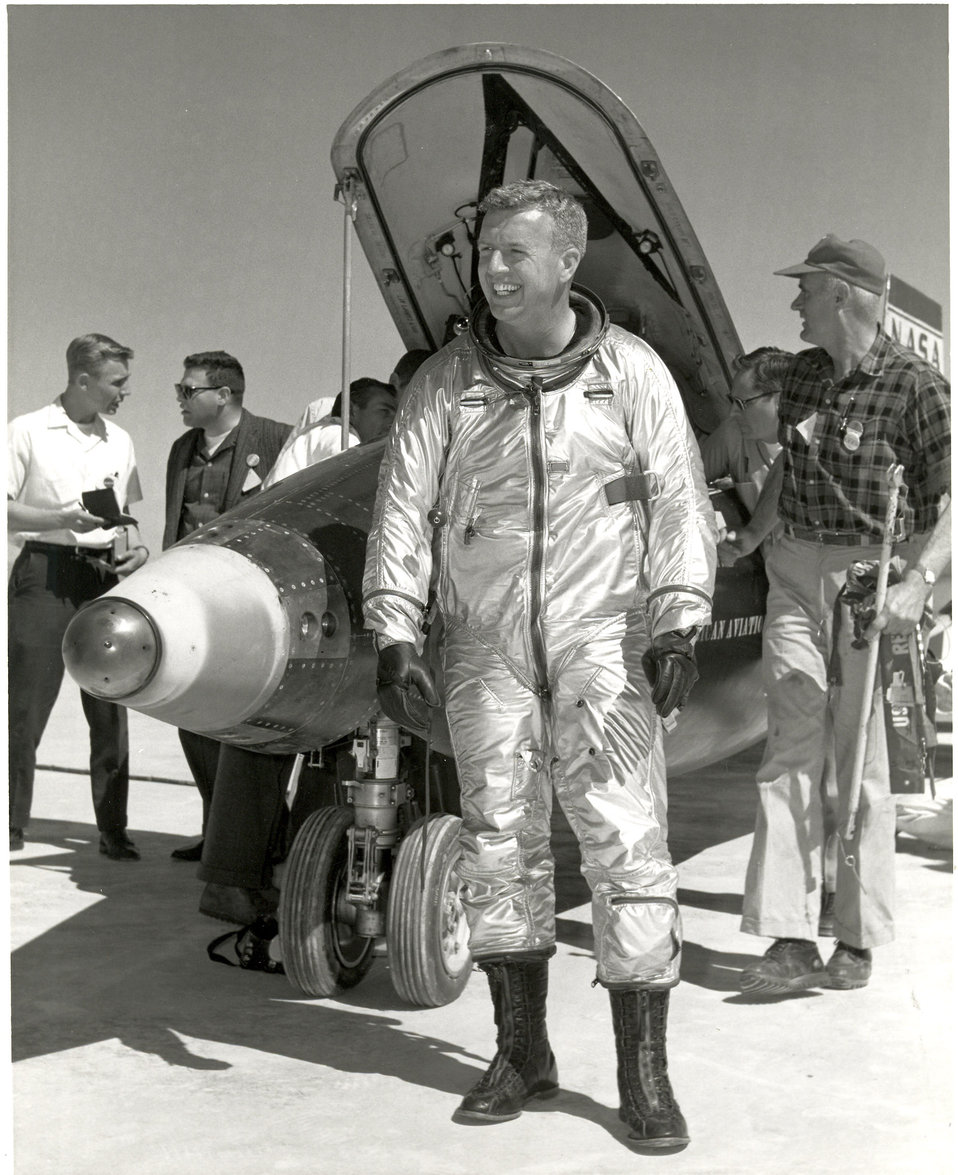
Joe Walker, a test pilot from NASA

On Aug. 22, 1963, Joe Walker, a test pilot from NASA, flew the X-15 to its peak altitude of 354,200 feet, 67 miles above the Earth's surface at Edwards Air Force Base, Calif.